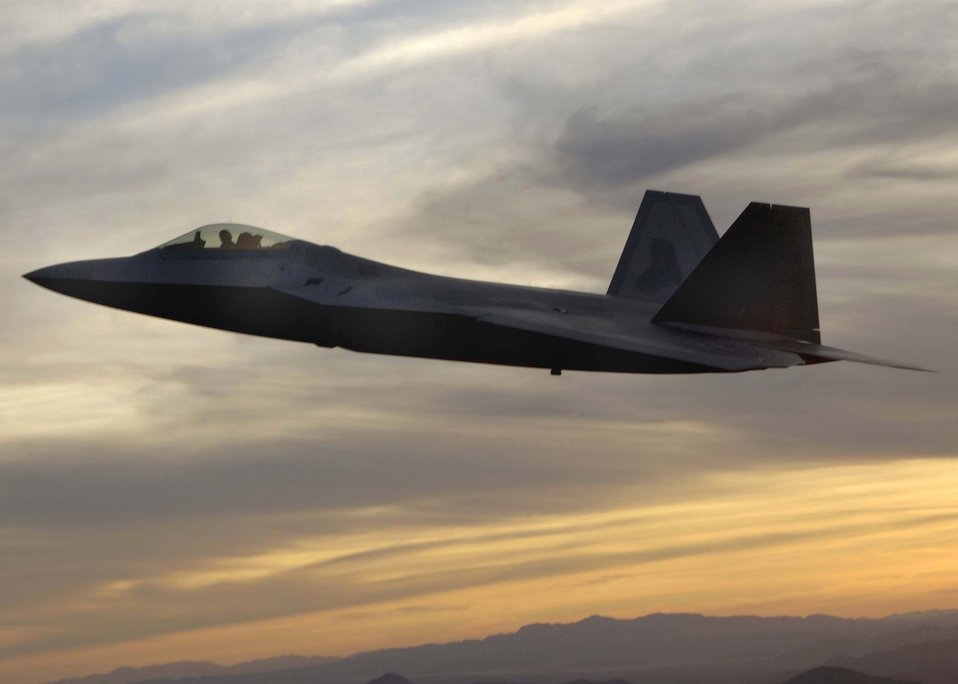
Heritage flight

An F-22A Raptor from Langley Air Force Base, Va., flies over Tucson, Ariz., Sunday March 5, 2006, during the 2006 Heritage Conference. The conference combines different U.S. aircraft from more than 60 years of aviation history to ensure certification in performing air shows worldwide.